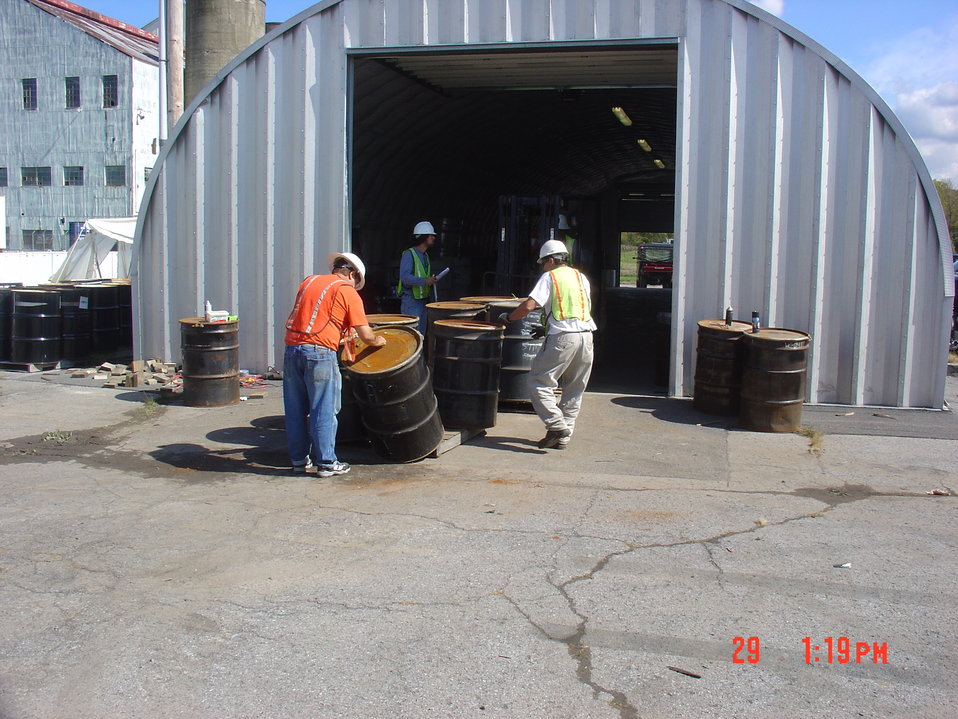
Drums.
Activities from the Niagara Falls Storage Site, which is associated with the former Lake Ontario Ordnance Works. Formerly Utilized Sites Remedial Action Program (FUSRAP), a program initiated in 1974 to identify, investigate and clean up or control sites that were part of the Nation's early atomic energy and weapons program. Activities at the sites that are eligible for FUSRAP were conducted by Manhattan Engineer District (MED) or the Atomic Energy Commission (AEC), both predecessors of the Department of Energy (DOE). The U.S. Army Corps of Engineers was assigned management of FUSRAP by Congress in 1997.